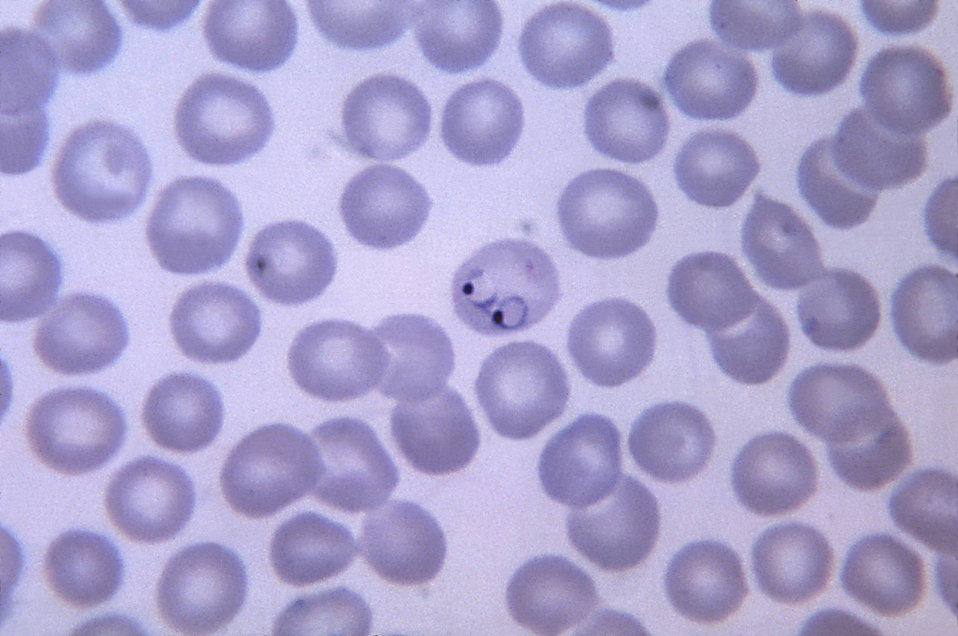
This thin film micrograph reveals a red blood cell containing two ring form P. vivax parasites; Mag. 1125X.